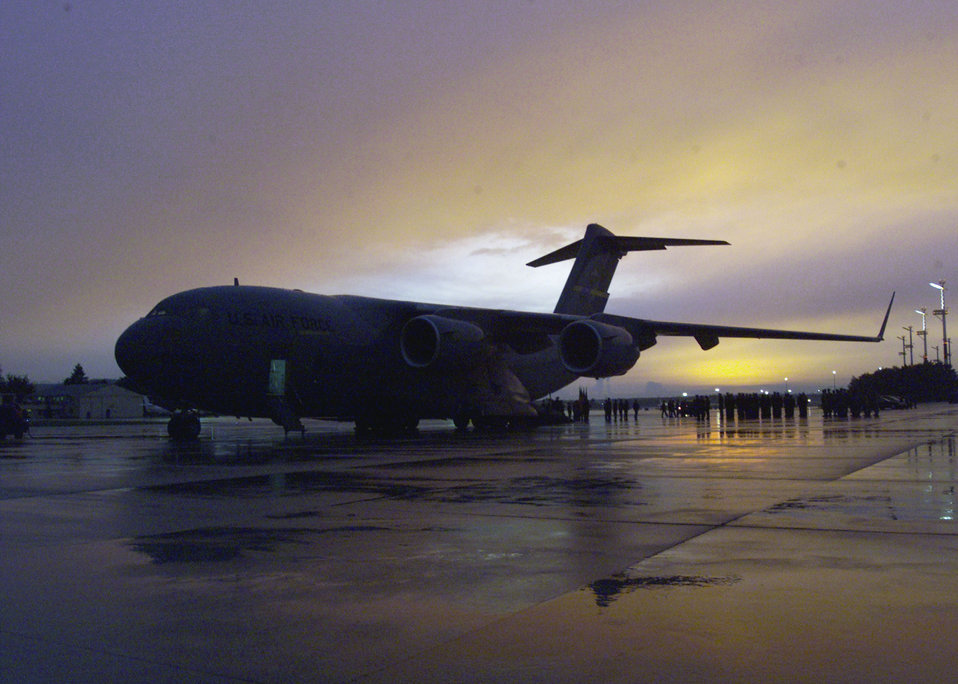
Solemn duty

RANSTEIN AIR BASE, Germany -- Members of the 86th Airlift Wing Honor Guard carry the remains of fallen sailors of the USS Cole from a C-17 Globemaster III here, Oct. 13, 2000. The Cole was bombed in the Yemen port city of Aden.